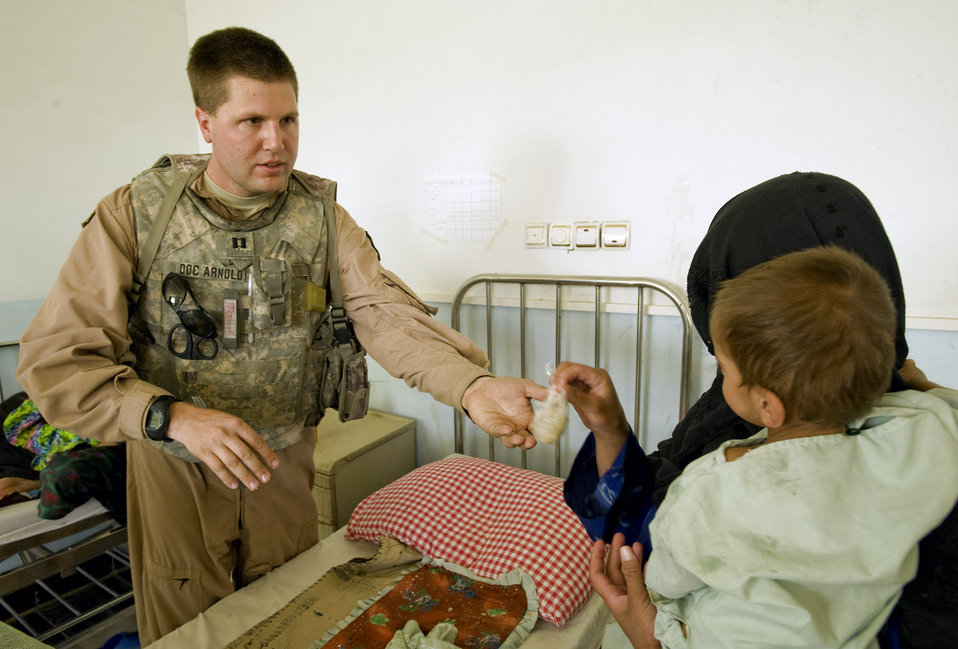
Zabul team combats malnutrition, unsafe water

Capt. (Dr.) James Arnold gives a food supplement to the mother of a malnourished Afghan child Aug. 9 at the Qalat Hospital in Qalat, Afghanistan. Dr. Arnold, along with other members of the Zabul Provincial Reconstruction Team, is working with local heath officials to combat the main causes of infant mortality such as unsanitary water supplies and malnutrition. Dr. Arnold is a family medicine physician at Anderson Air Force Base, Guam.